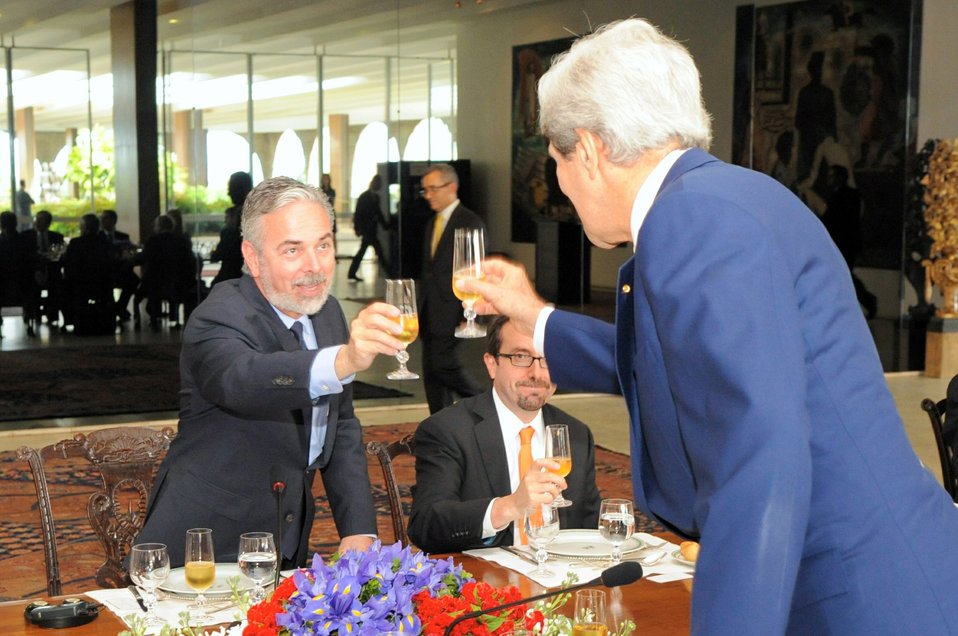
Secretary Kerry and Brazilian Foreign Minister Patriota Share a Toast

U.S. Secretary of State John Kerry and Brazilian Foreign Minister Antonio Patriota share a toast before a working lunch in Brasilia, Brazil, on August 13, 2013.